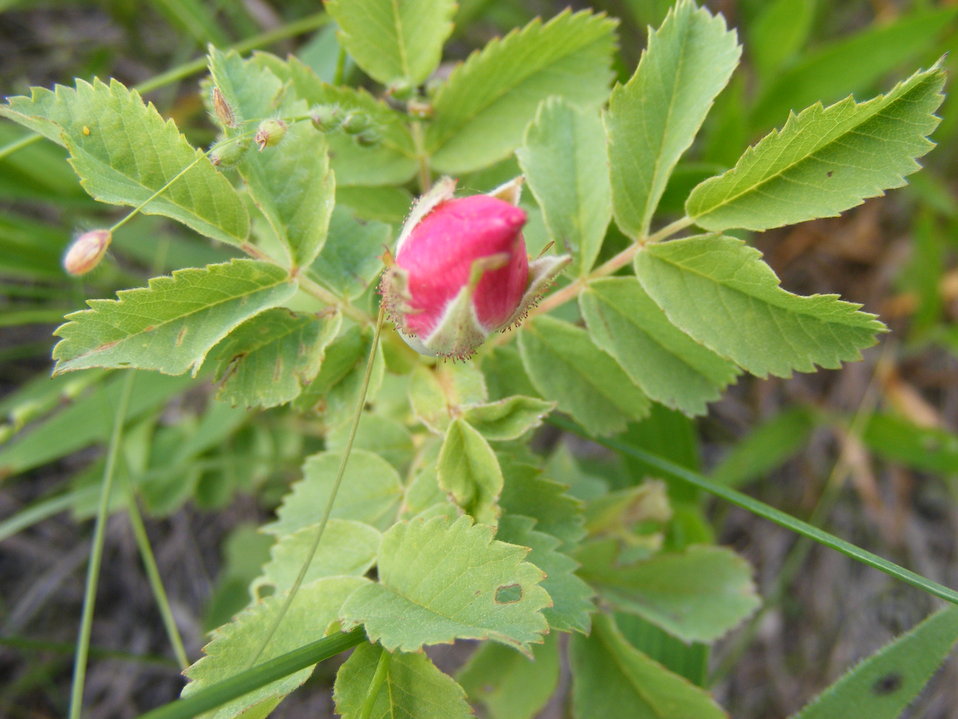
Wild Rose

Wild roses provide a touch of pink in spring and summer and bright red in fall when the rose hips are ripe. Hips are eaten by many animals as well as people - plain or in jams. Climbing roses popular in gardens are descendants of these native wild roses.